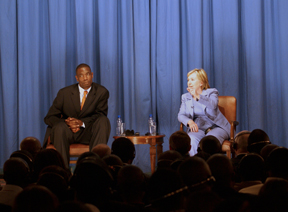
Secretary Clinton Conducts Town Hall Meeting With Congolese Students

U.S. Secretary of State Hillary Rodham Clinton and pro basketball player Dikembe Mutombo conduct a town hall meeting with Search for Common Ground and Congolese University Students August 10, 2009 in Kinshasa, Democratic Republic of the Congo.